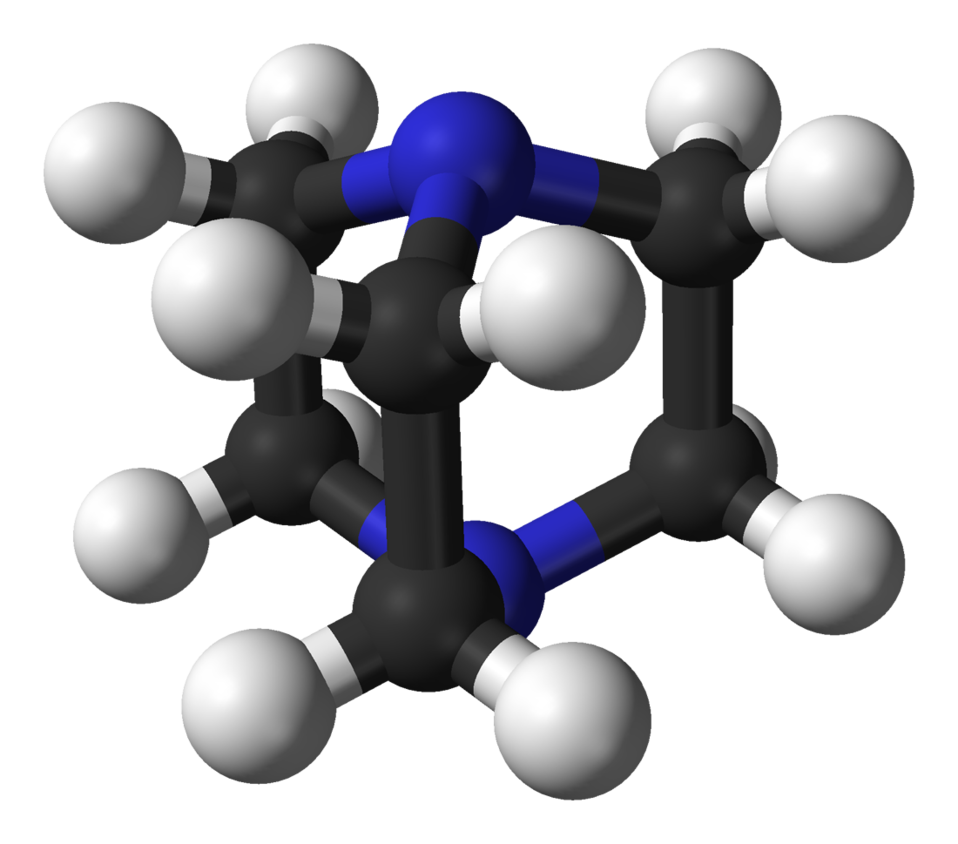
Ball-and-stick model of the 1,4-diazabicyclo[2.2.2]octane (DABCO) molecule